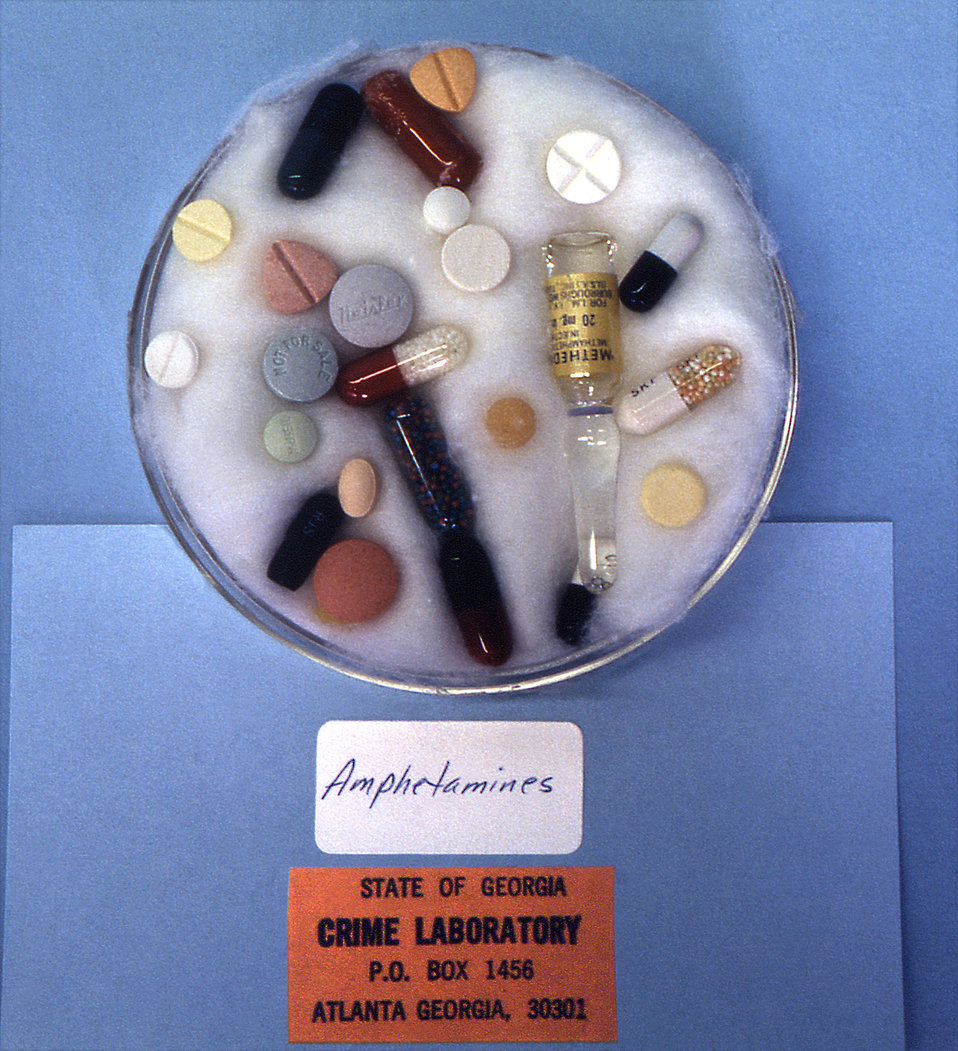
Lined with cotton, this culture plate contains an assortment of amphetamines, which had been confiscated during the control of criminal activities in and around the city of Atlanta, Georgia during 1973.